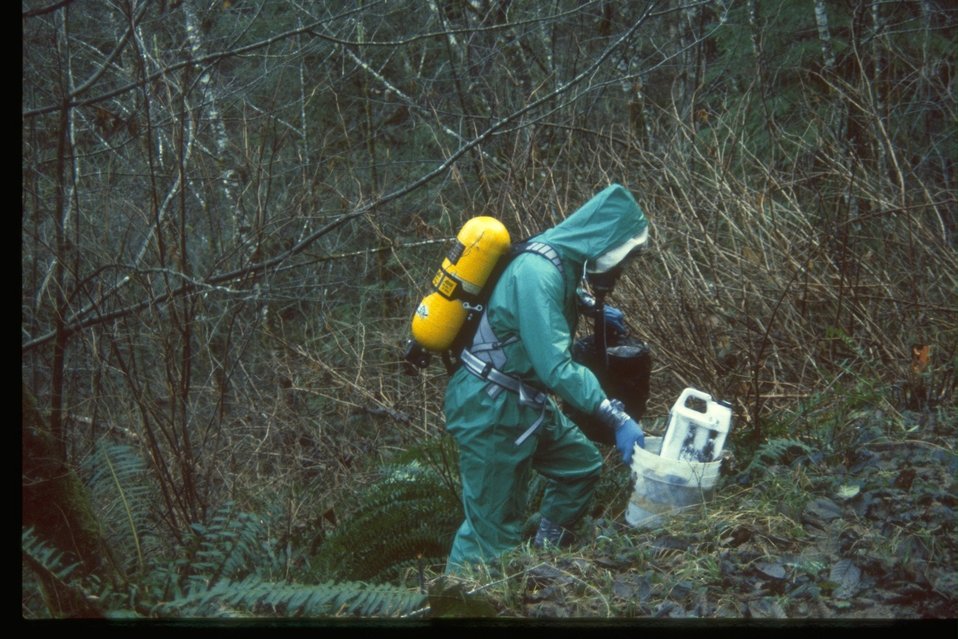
Haz-Mat clean up contractor.